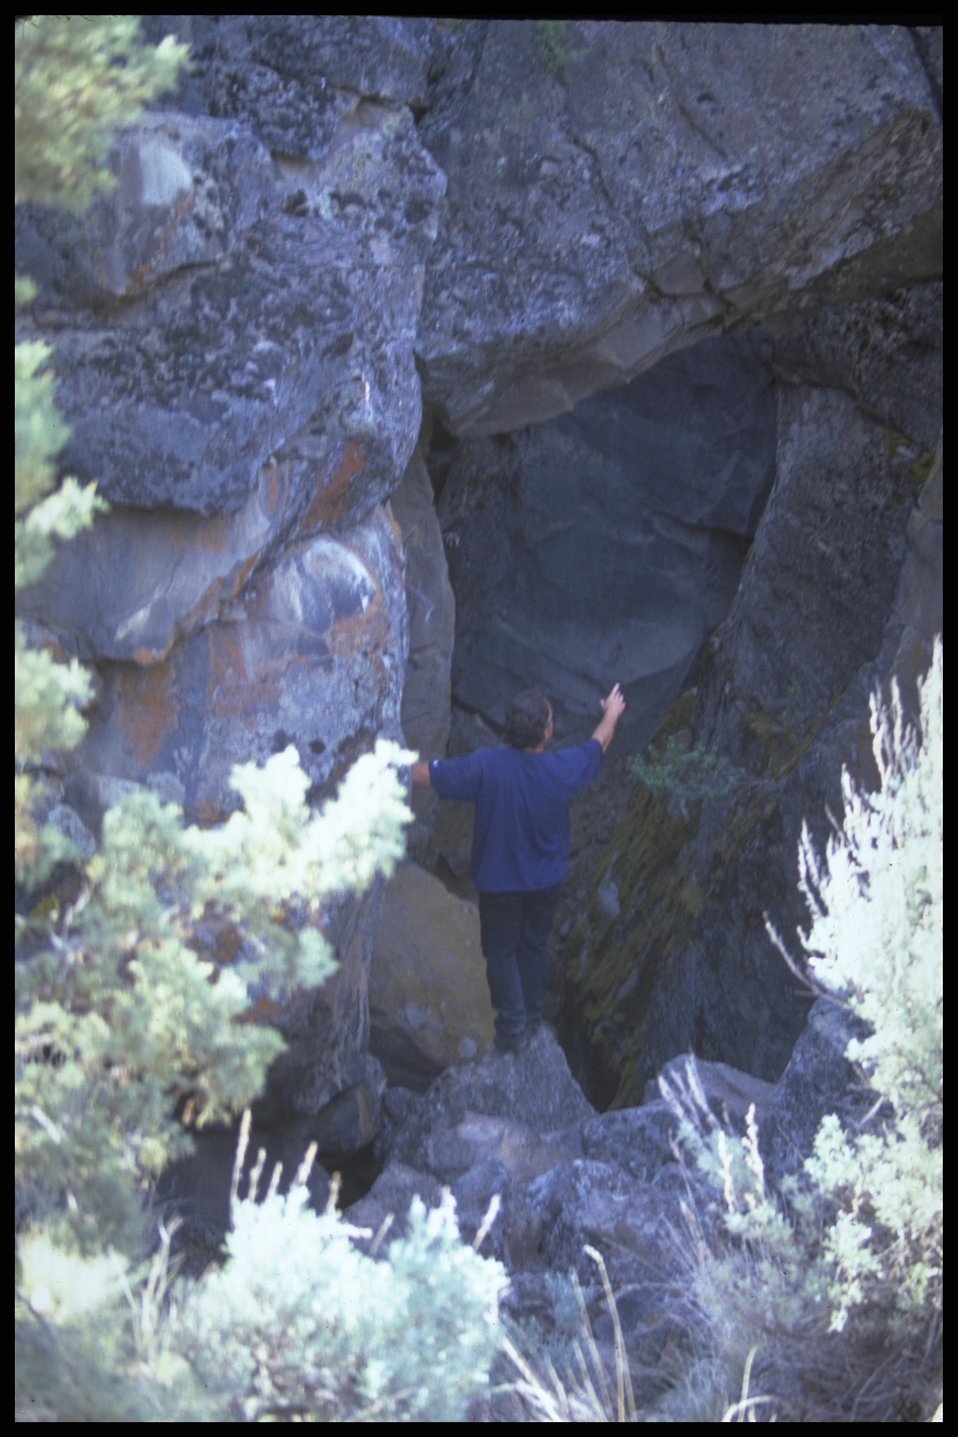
Tourist at "Crack in the Ground", Lakeview District.